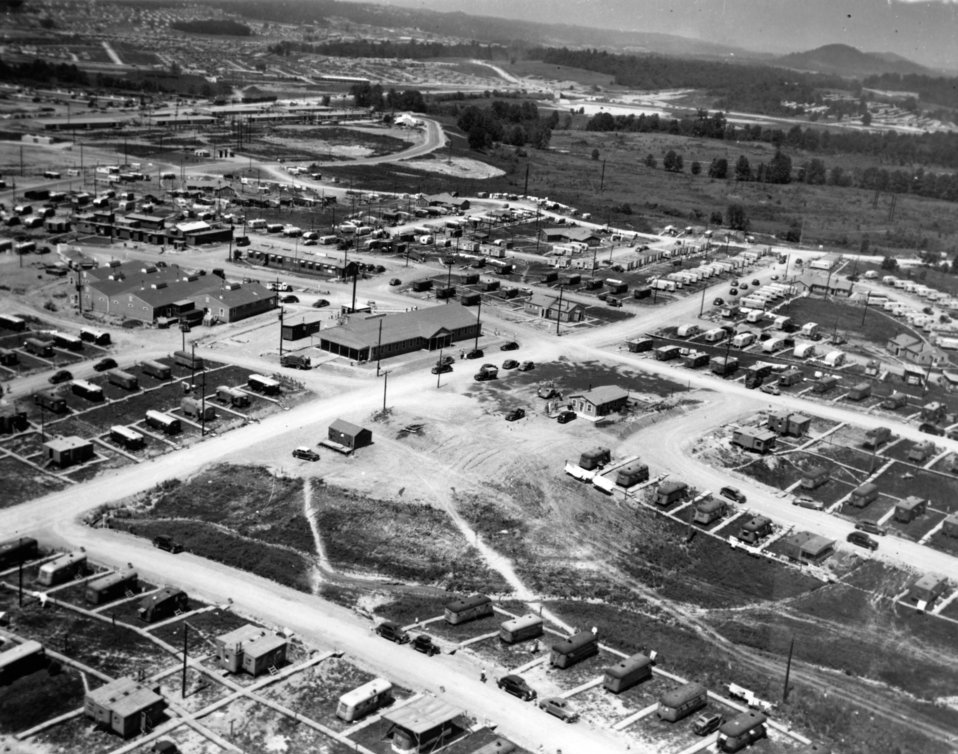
Aerial of Oak Ridge